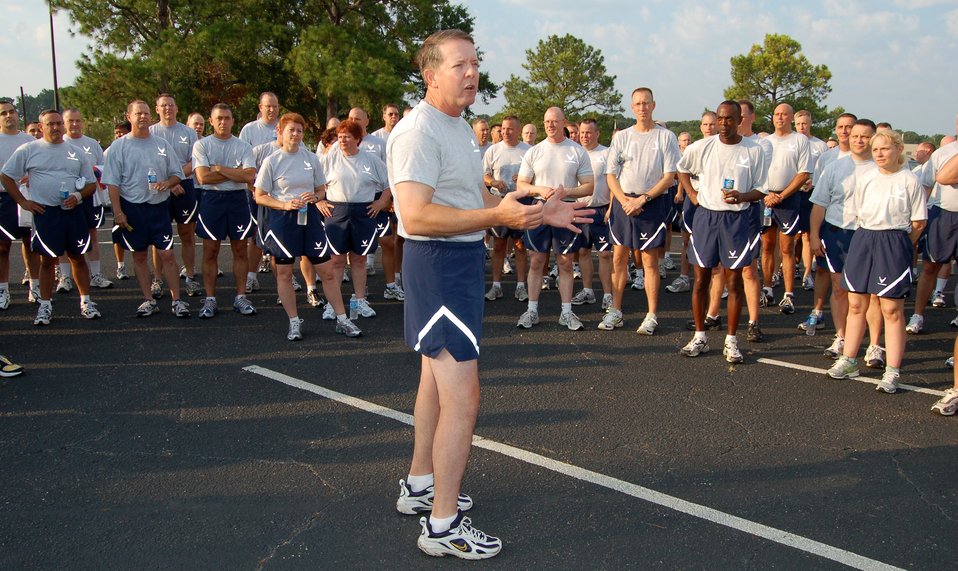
Enlisted leaders hit the road to set example

Chief Master Sgt. of the Air Force Rodney J. McKinley addresses senior enlisted leaders July 22 following a fitness run that kicked off the Senior Enlisted Leader Summit at Maxwell Air Force Base's Gunter Annex, Ala.